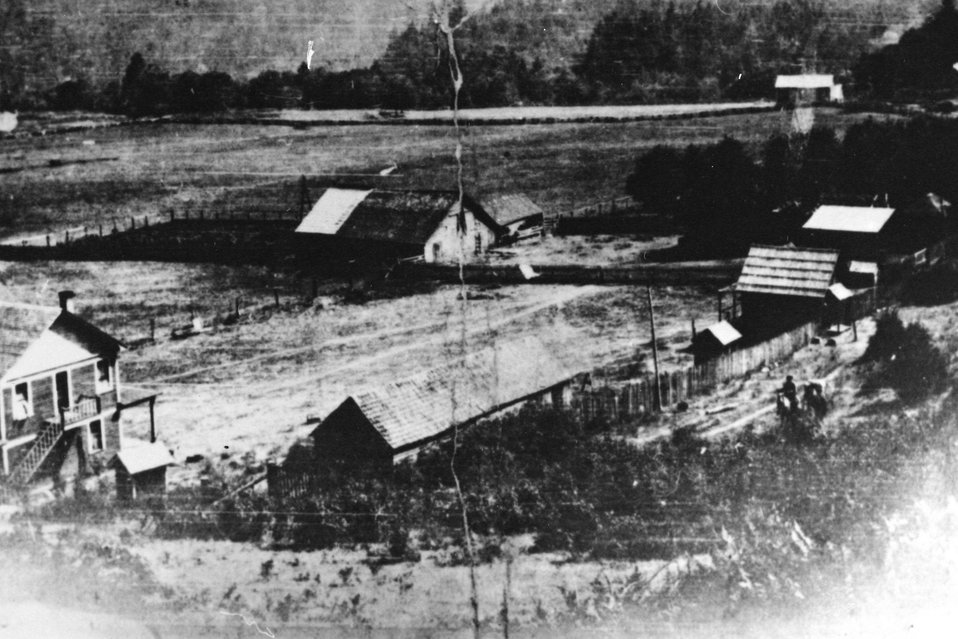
Jake Fry's Big Bend Ranch.